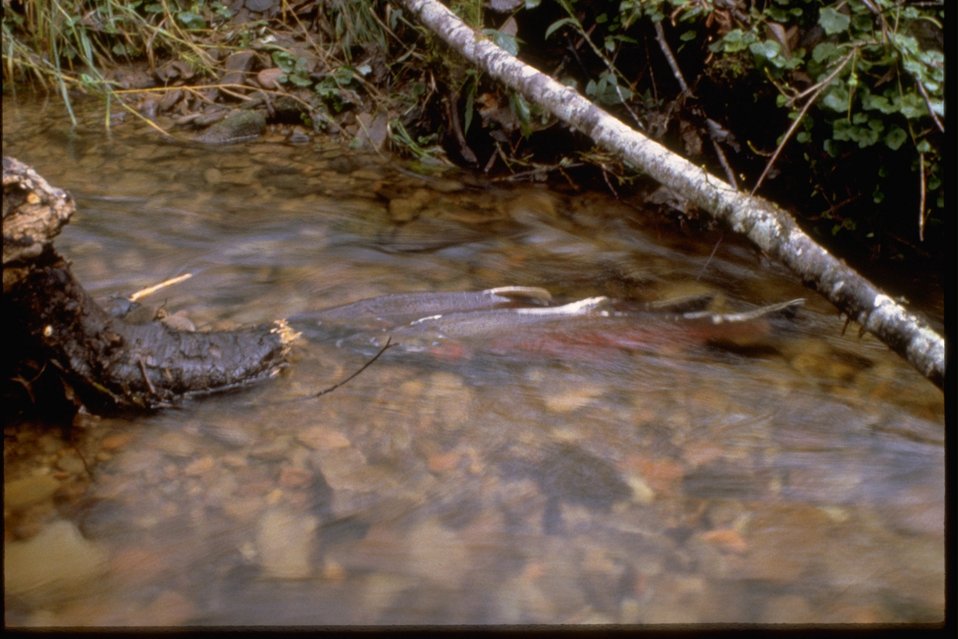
Salmon in a small stream.